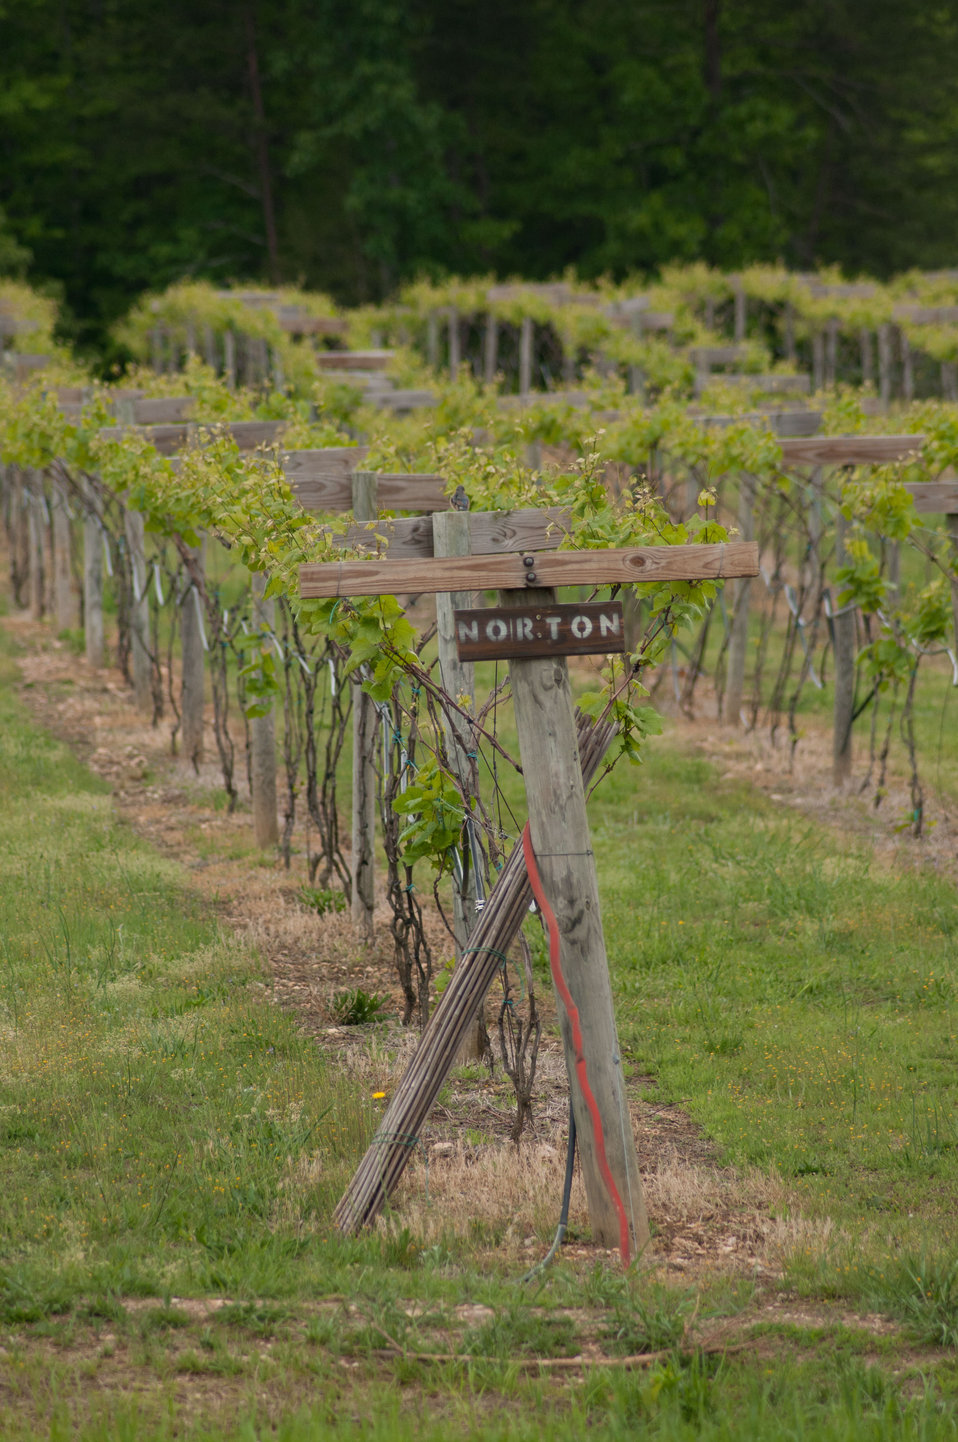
Cooper Vineyards in Louisa, VA, is the first winery on the East Coast and the second in the country to be awarded the fourth and highest, Platinum certification by Leadership in Energy and Environmental Design (LEED).
From a Virginia Wine Board Marketing Office press release, “The process of building a LEED platinum certified building was initially more expensive and arduous than co-owners, Jacque Hogge, MD and Geoffrey Cooper, MD expected, but they were able to get financial assistance from the United States Department of Agriculture. “Know that there are grants available to help with the costs of sustainable building projects,” Hogge advises to other potential green wineries. Cooper Vineyards received 2 of the 3 USDA (U.S. Department of Agriculture Rural Development (RD) Rural Energy Financing program) grants awarded in Virginia in 2010 to help with the expenses of their construction.”
Rural Energy Financing program focuses on loan guarantees, loans and grants to agricultural producers, businesses, cooperatives and rural residents for renewable energy systems and to make energy efficiency improvements.
The tasting room and building collects rainwater from the roof; uses low flow water fixtures to reduce usage by 40%; utilizes structurally insulated panels for the roof and walls; heats and cools the entire building using a geothermal system that includes pipes that are embedded in the parking lot; low-voltage LED lighting with daylight and occupancy sensors provide ample light when it is needed; a solar panel array provides more than 15% of the energy needs for the building, and much of the construction materials are from local and recycled material sources. For more information about USDA please go to www.usda.gov, Rural Development and Rural Energy Financing. LEED was developed by the U.S. Green Building Council (USGBC) is a 501 c3 non-profit organization committed to a prosperous and sustainable future for our nation through cost-efficient and energy-saving green buildings.